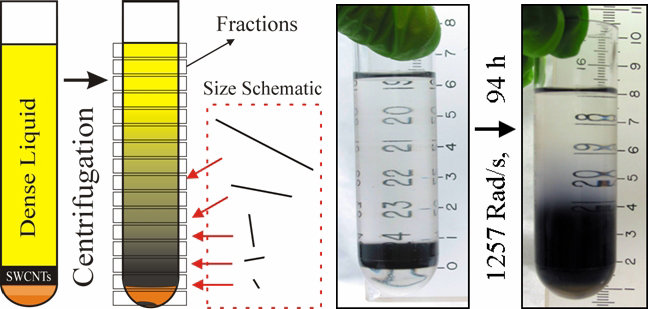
New Technique Sorts Nanotubes by Length

In a schematic of NIST's length separation technique for carbon nanotubes (l.), the nanotubes start at the bottom of a dense fluid. When spun in a centrifuge, the nanotubes begin to migrate through the fluid driven by their buoyancy, but the longer ones move faster, spreading them out by length. Photos (r.) shows a typical sample at the start and after 94 hours of spinning at 1257 radians per second (roughly 12,000 RPM.)